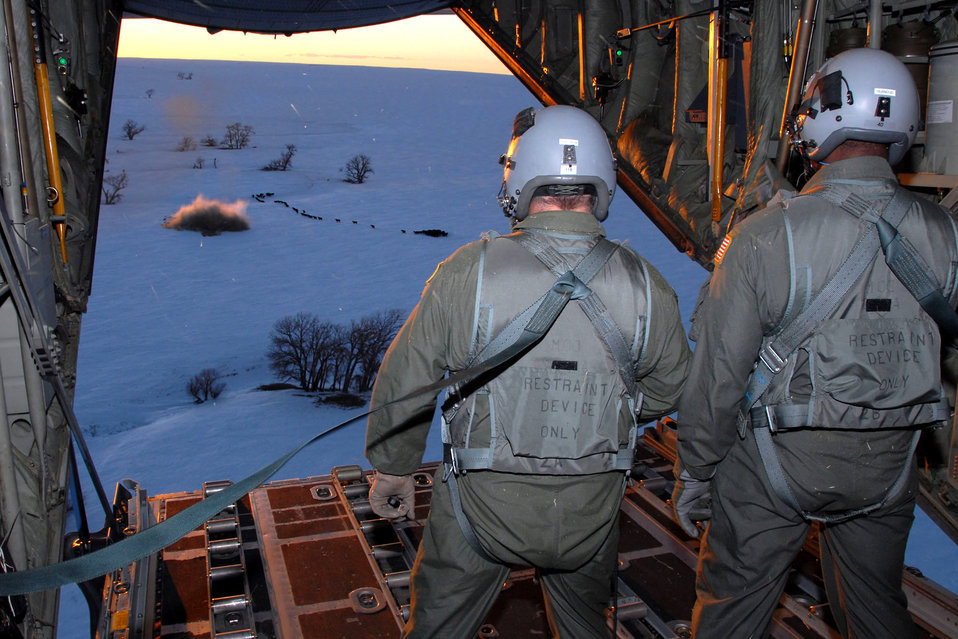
Emergency feeding mission

Loadmasters from the Wyoming Air National Guard watch a one-ton hay bale land near a herd of cows during an emergency feeding mission Jan. 3 caused by a snowstorm that hit the area in southeastern Colorado.